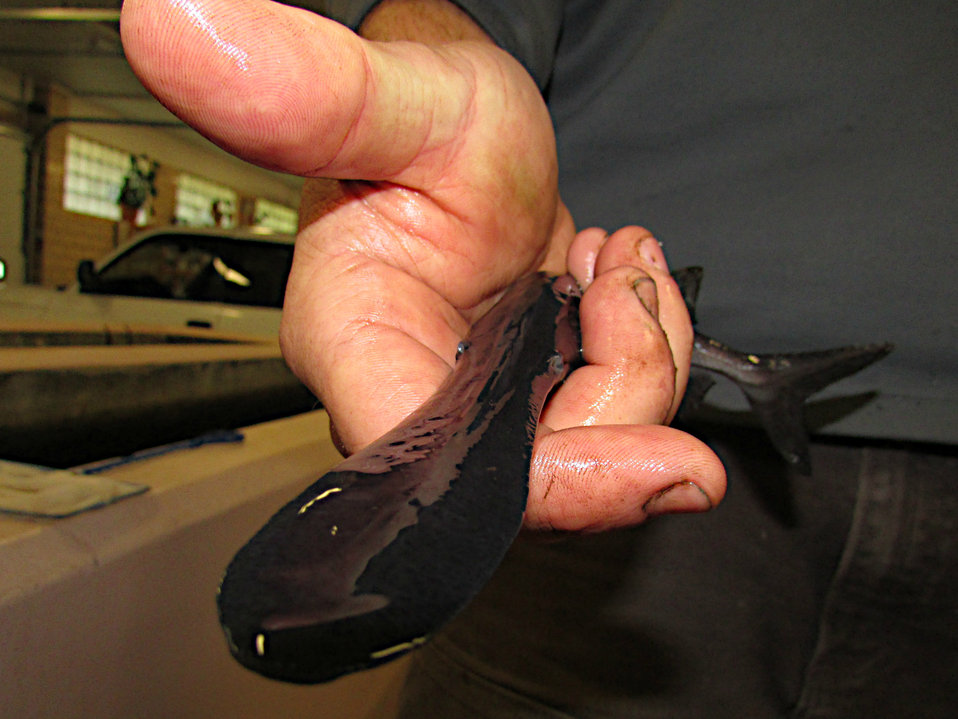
Last Paddlefish

September 19th we released about 5,000 paddlefish into Lake Francis Case! Here is one of them before making the trip to Chamberlain.

So long class of 2013 paddlefish!